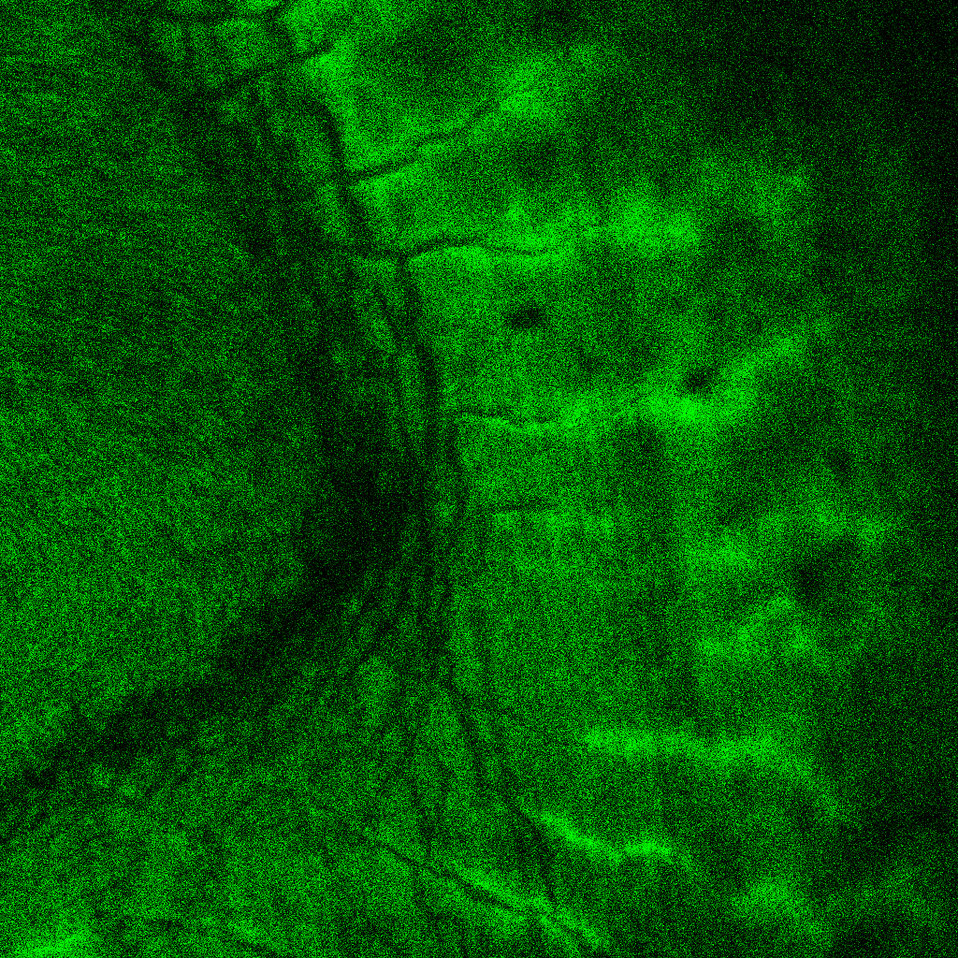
Hydroxyapatite crystal

Deposits of hydroxyapatite crystal light up bright green where they've been tagged with a new peptide created at NIST to bond specifically to the compound. The peptide has been linked to a fluorescent stain for imaging.